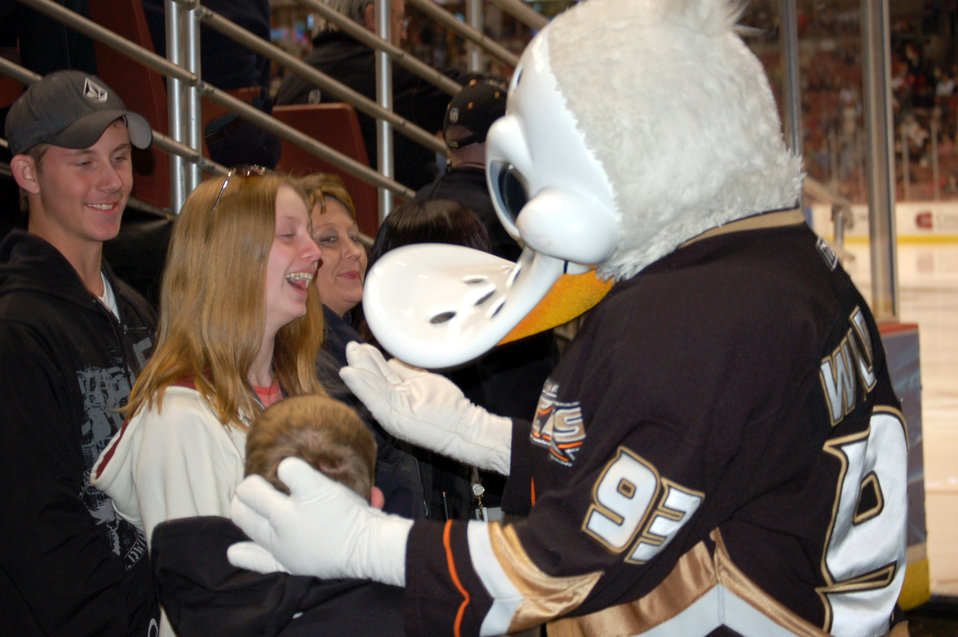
Magical weekend ends on ice

A family participating in the Snowball Express shares a laugh with the Anaheim Ducks mascot Wildwing Dec. 18. The game was the final activity of the four-day Snowball Express event. The event was open to all military families who lost someone in the war on terrorism.